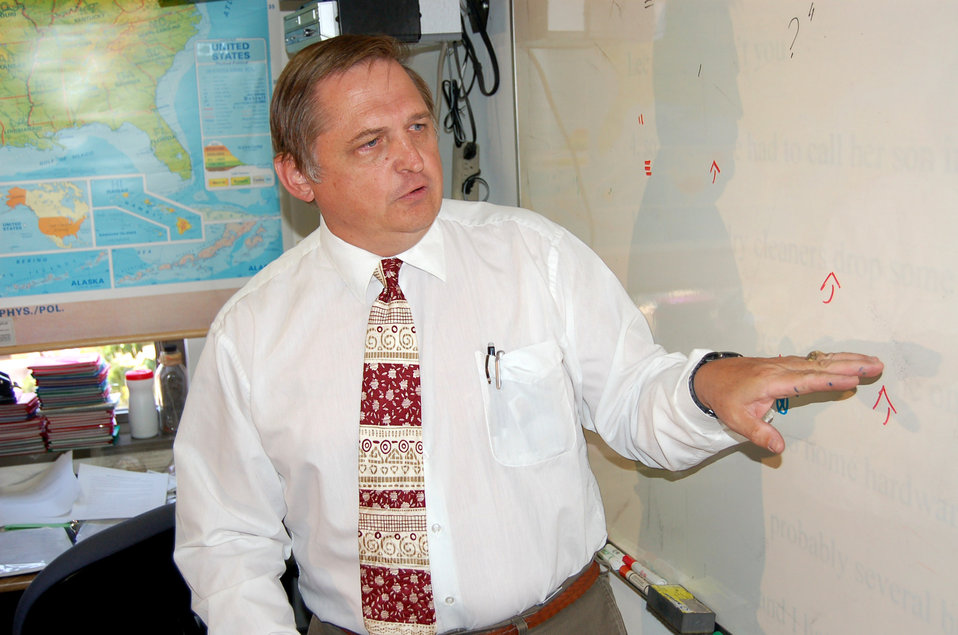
DLI fosters international goodwill

Instructor Ken Stroebel points out the proper correction of an error-filled sentence at the Defense Language Institute English language course at Lackland Air Force Base, Texas, on July 18. Students were each assigned a paragraph to correct in front of the class.